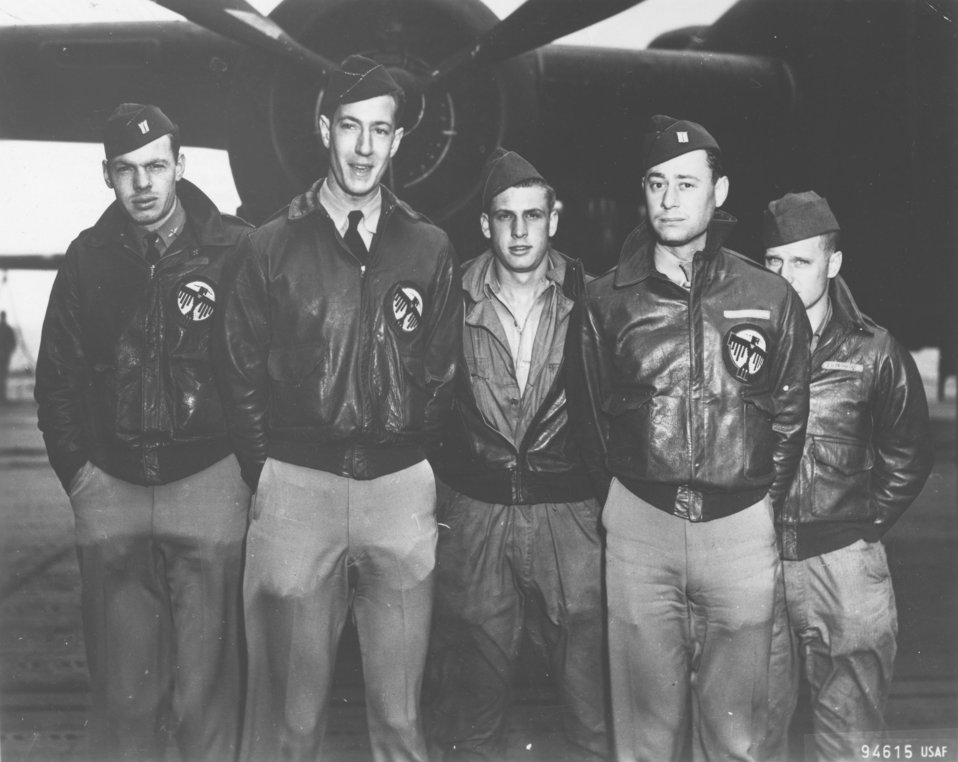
Doolittle Tokyo Raiders, Crew No. 16

Crew No. 16 (Plane #40-2268, target Nagoya): 34th Bombardment Squadron, front row: Lt. William G. Farrow, pilot; and Lt. Robert L. Hite, copilot; back row: Lt. George Barr, navigator; Cpl. Jacob D. DeShazer, bombardier; and Sgt. Harold A. Spatz, flight engineer/gunner.